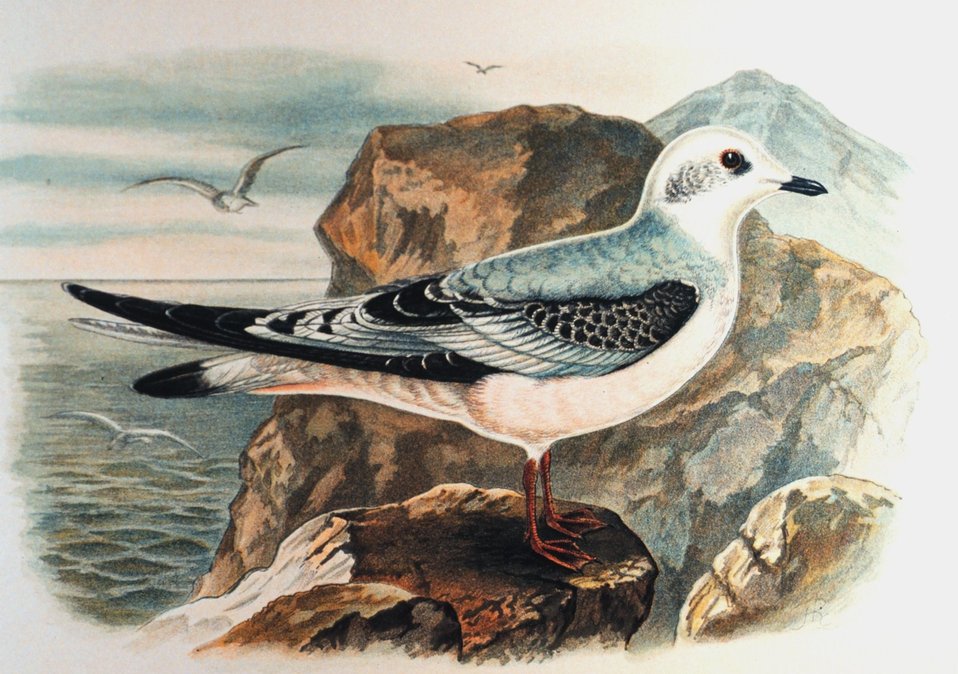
Rhodostethia rosea, juvenile, first autumn. In: 'Report of the International Polar Expedition to Point Barrow ....' Expedition leader Lieutenant P. H. Ray. Published in 1885. Library Call Number Q115.I6 U6 1885.